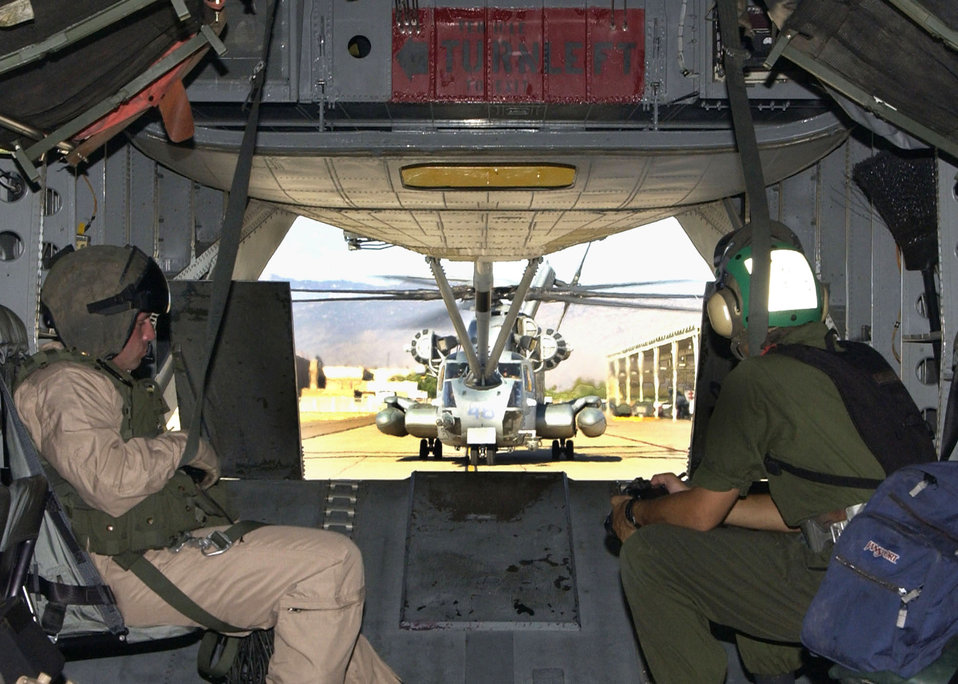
Snowbird operations

Two Marines prepare for takeoff in a CH-53E Super Stallion helicopter from the Marine Heavy Helicopter Squadron 769 at Edwards Air Force Base, Calif. The CH-53Es are here training with Airmen from the 79th Rescue Squadron as part of Davis-Monthan's joint operations training.